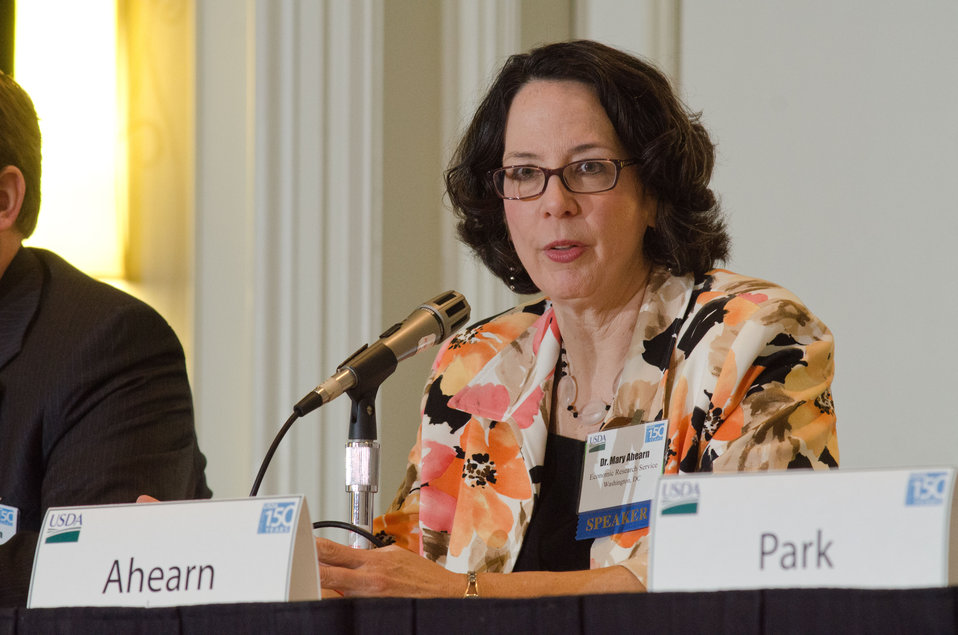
griculture Economic Research Service Economist Dr. Mary Ahearn responded to questions, during “The Farm Income Outlook for 2012” session of the Food Prices & Farm Income Track, at the 2012 Agricultural Outlook Forum, “Moving Agriculture Forward, Growing, Innovating and Celebrating 150 Years.” held at the Crystal Gateway Marriott Hotel, Arlington, Virginia, on Friday, February 24, 2012. The session focused on general measures of the financial well being of the farm economy, including USDA’s official outlook for farm income, the distribution of income across farm households, and the competitiveness of the rural economy.